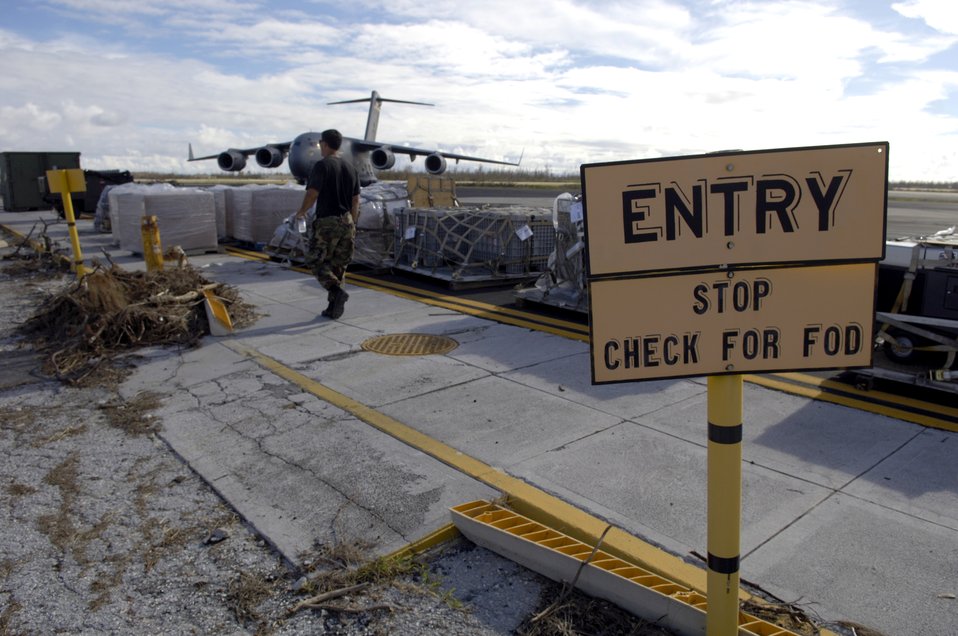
Hickam team begins Wake Island assessment

An Airman walks past pallets lined up on the Wake Island flightline Sept. 12, which were offloaded from the C-17 Globemaster III in the background. The 36th Contingency Response Group at Andersen Air Force Base, Guam, is assisting a 53-person team from Hickam AFB, Hawaii, assessing damage left by Super Typhoon Ioke after it hit the island Aug. 31.